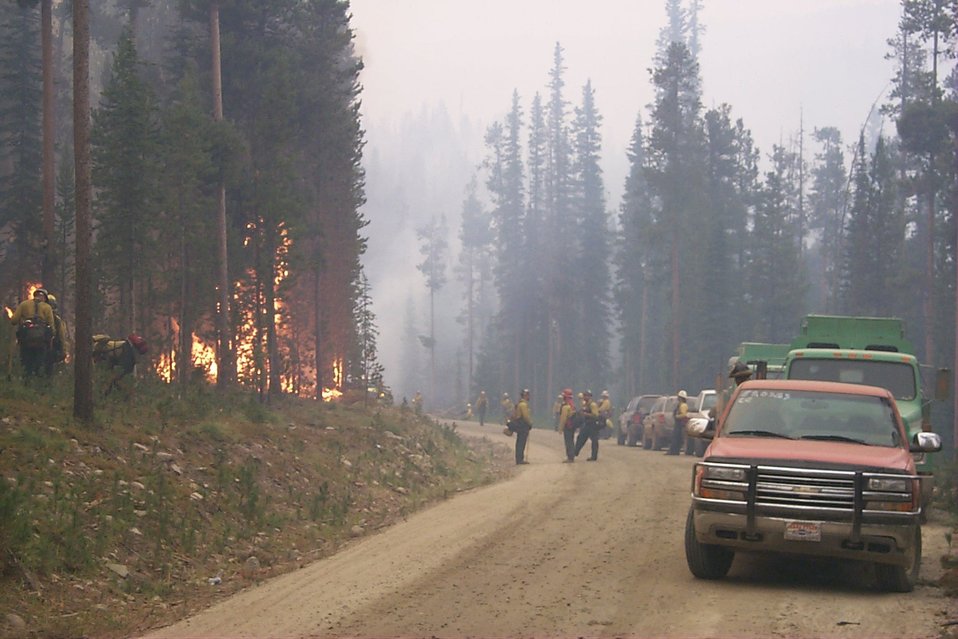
Fire fighters holding line Fire Clearwater Fire Salmon Field Office USRD Upper Snake River District